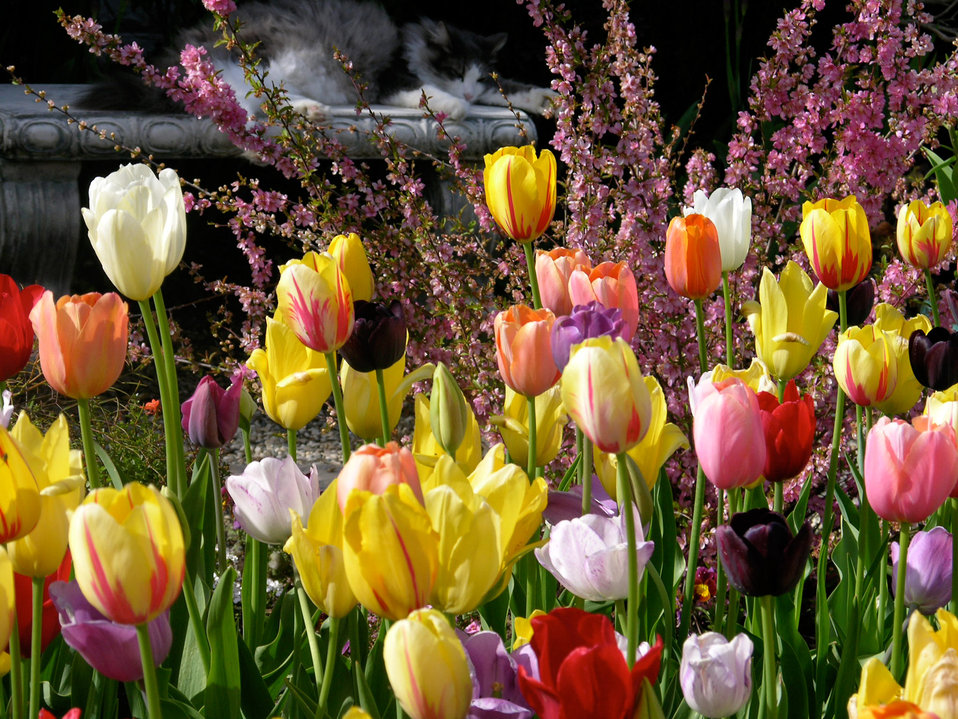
My cat and tulips

These are a few of my favorite things..